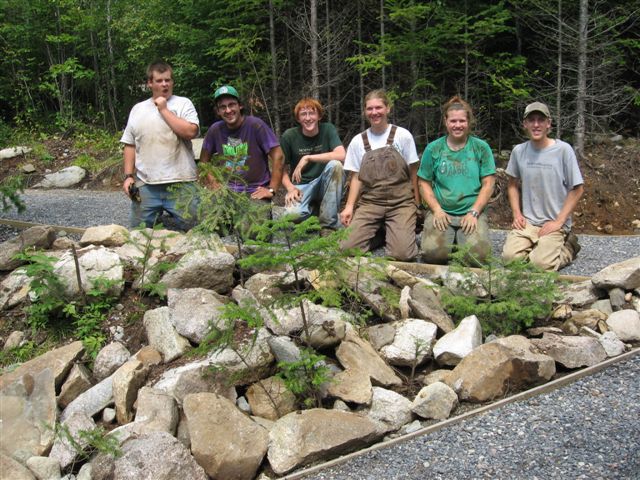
YCC on Mud Pond Trail

U.S. Fish and Wildlife Service